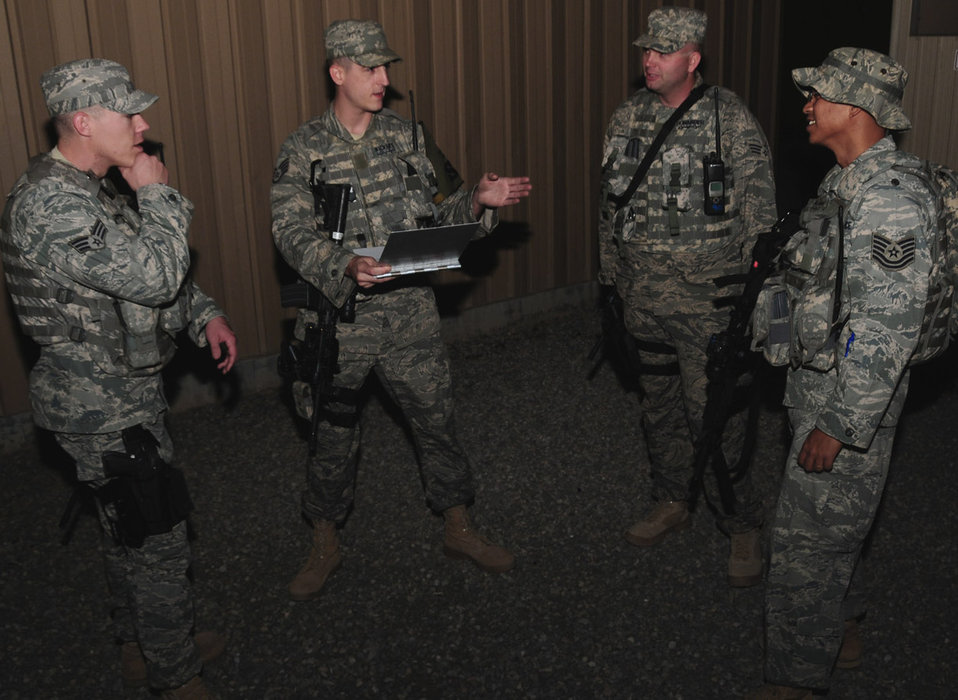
Security team provides safety net for Airmen

Security escort team members assigned to the 386th Expeditionary Security Forces Squadron prepare April 15 for another mission at an air base in Southwest Asia. The SET is responsible for the safety and security of moving people from one destination to another.